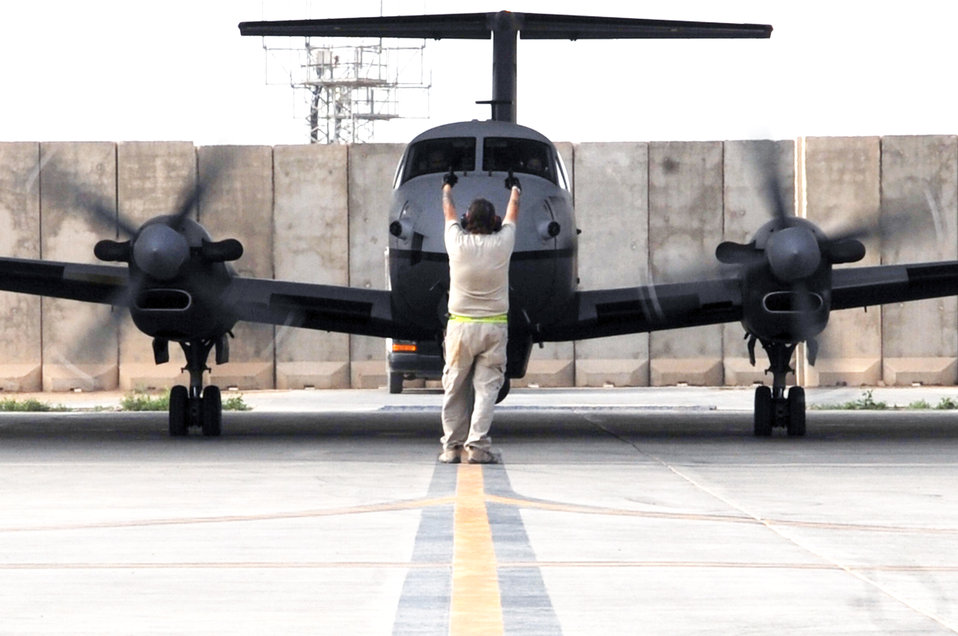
MC-12 aircrews complete 2,000th combat sortie

An MC-12 Liberty prepares for takeoff March 11, 2010, at Joint Base Balad, Iraq. Recently the program, assigned to the 362nd Expeditionary Reconnaissance Squadron, completed its 2,000th combat sortie.